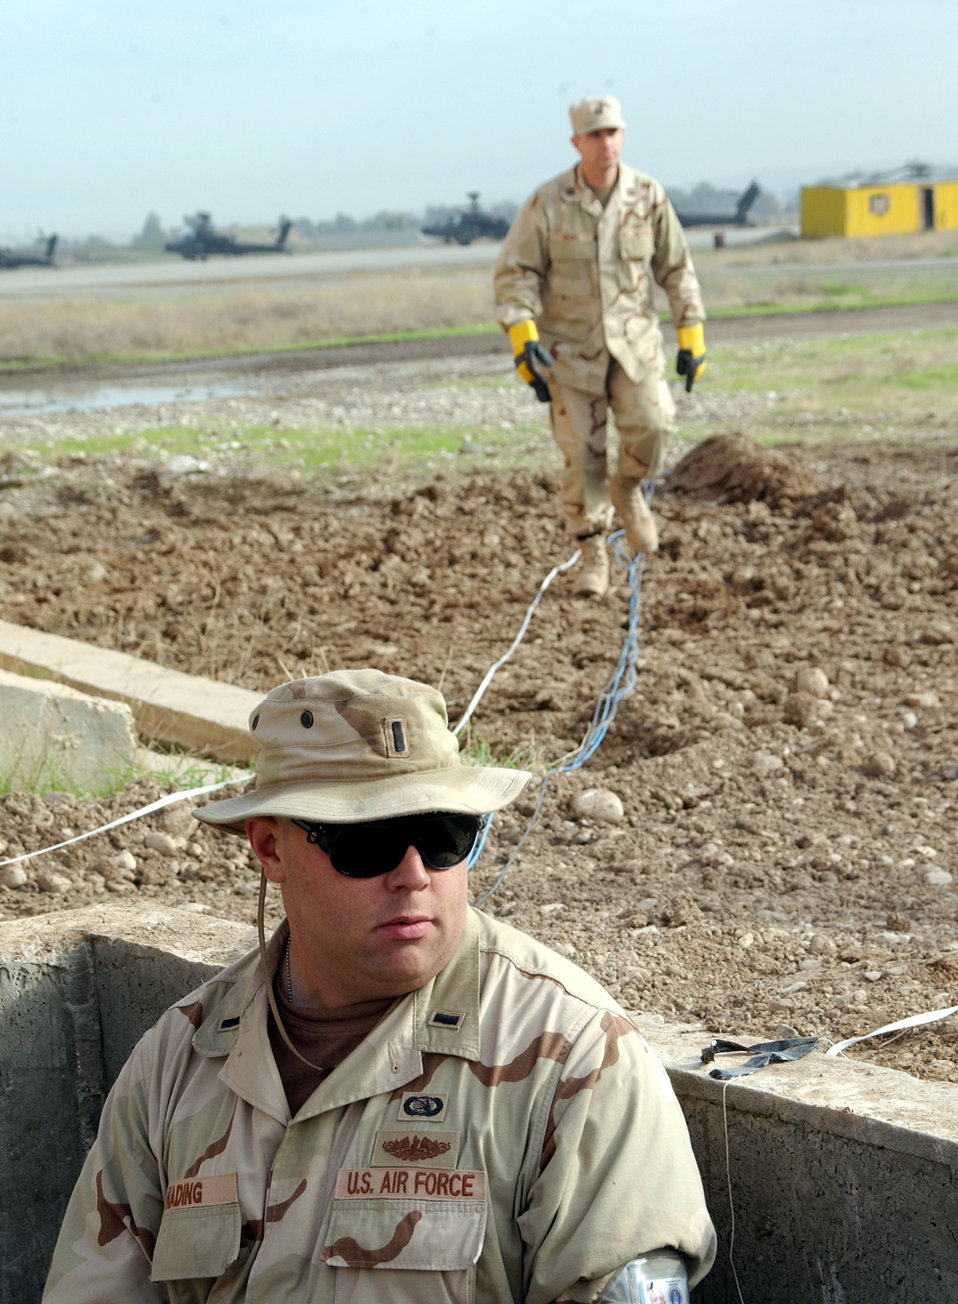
Wired in Kirkuk

KIRKUK AIR BASE, Iraq -- 1st Lt. Michael Nading and Capt. Edward Reder help bury fiber optic and copper cable here. Airmen from the 506th Expeditionary Communications Squadron have installed more than 45,000 feet of cable to 55 facilities to support telephone and computer network communications for deployed forces. Nading and Reder are assigned to the squadron.